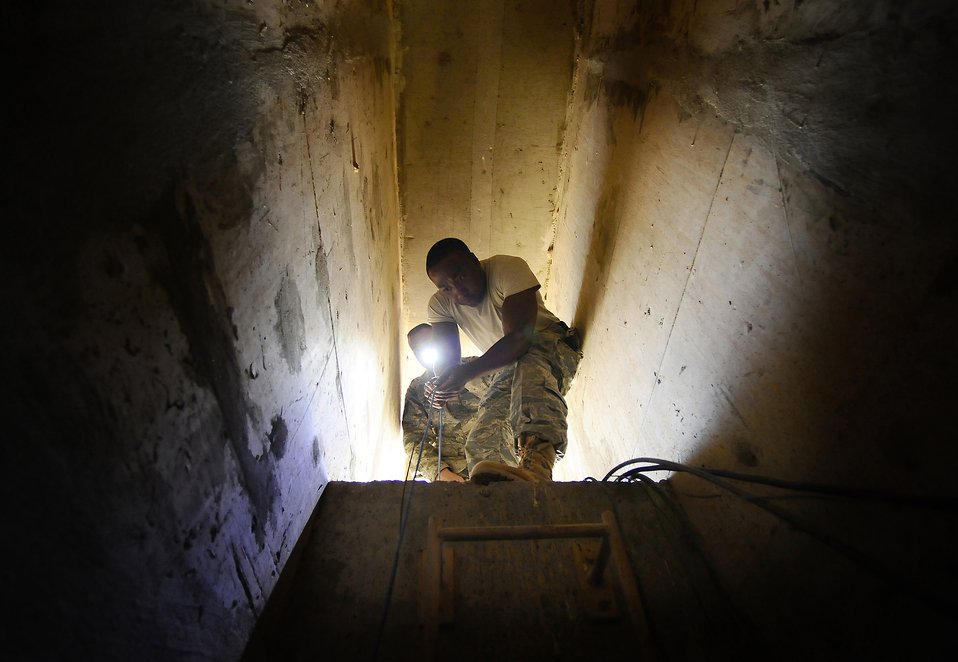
Keeping the lines of communication open

Senior Airman David Kimbrough and Tech. Sgt. Josh Wedin, with the 332nd Expeditionary Communications Squadron, inspect communications wiring beneath an aircraft shelter Nov. 25 at Joint Base Balad, Iraq. Airman Kimbrough is deployed from McConnell Air Force Base, Kan., and Sergeant Wedin, from Keesler AFB, Miss.